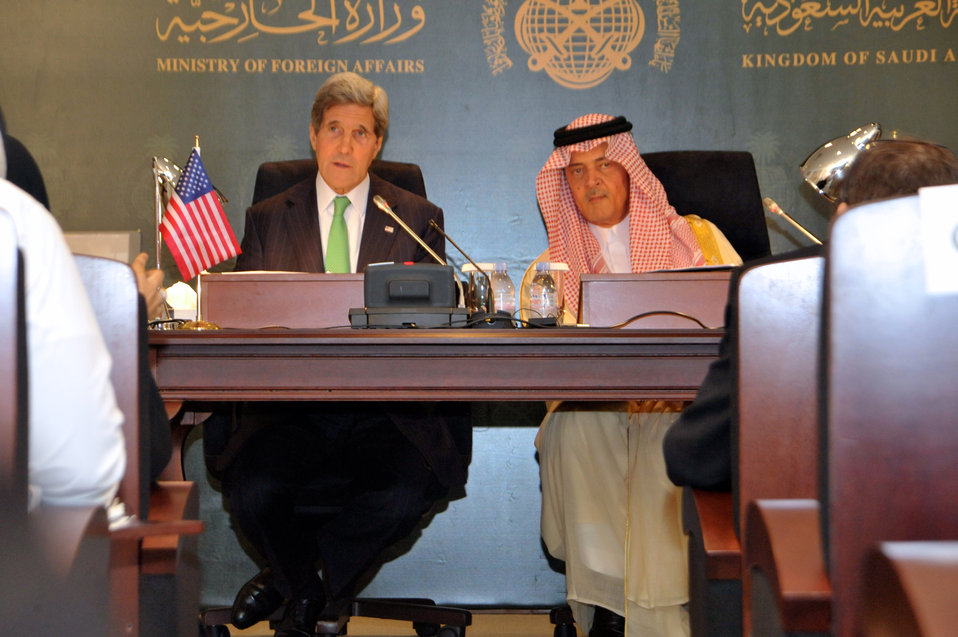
Secretary Kerry and Saudi Foreign Minister al-Faisal Hold a Joint News Conference

U.S. Secretary of State John Kerry and Saudi Foreign Minister Saud al-Faisal hold a joint news conference after a meeting in Jeddah, Saudi Arabia, on June 25, 2013.